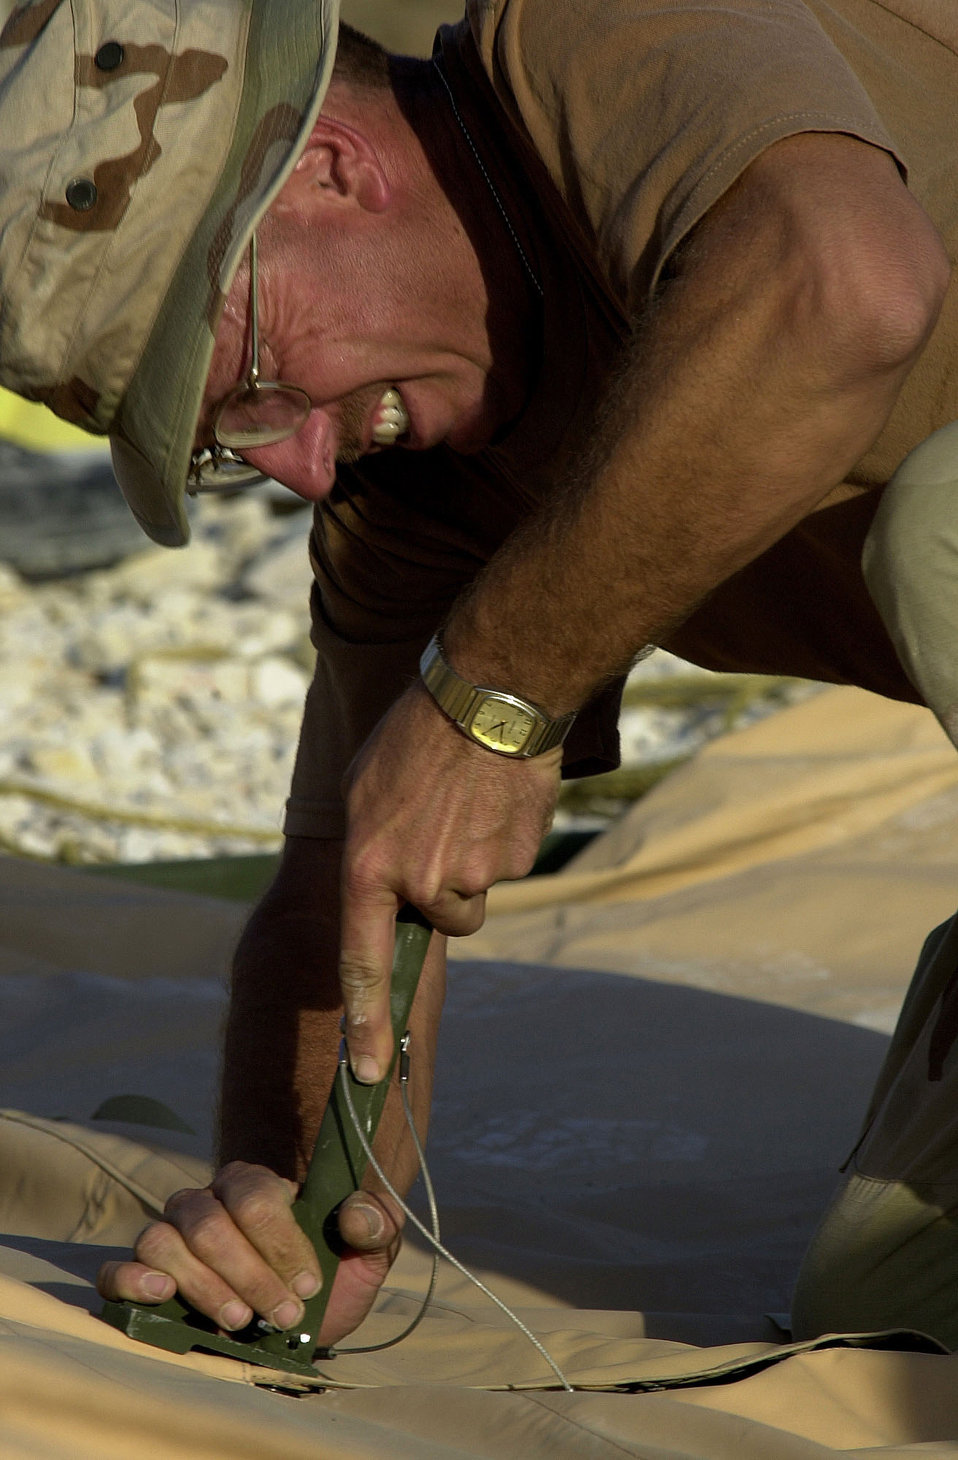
Building a new home

OPERATION ENDURING FREEDOM -- Tech. Sgt. Terry Brancheau, an aerial ground equipment technician from the 49th Material Maintenance Squadron at Holloman Air Force Base, N.M., inserts a tent pole prior to securing the roof section of a tent at an operating location in support of Operation Enduring Freedom. Forward operating bases put the coalition forces much closer to their core objectives -- destruction of al Qaeda and the Taliban government. They reduce the number of seven, eight and nine-hour missions. They are not built as a means to invade a country and as soon as missions are completed they are removed.